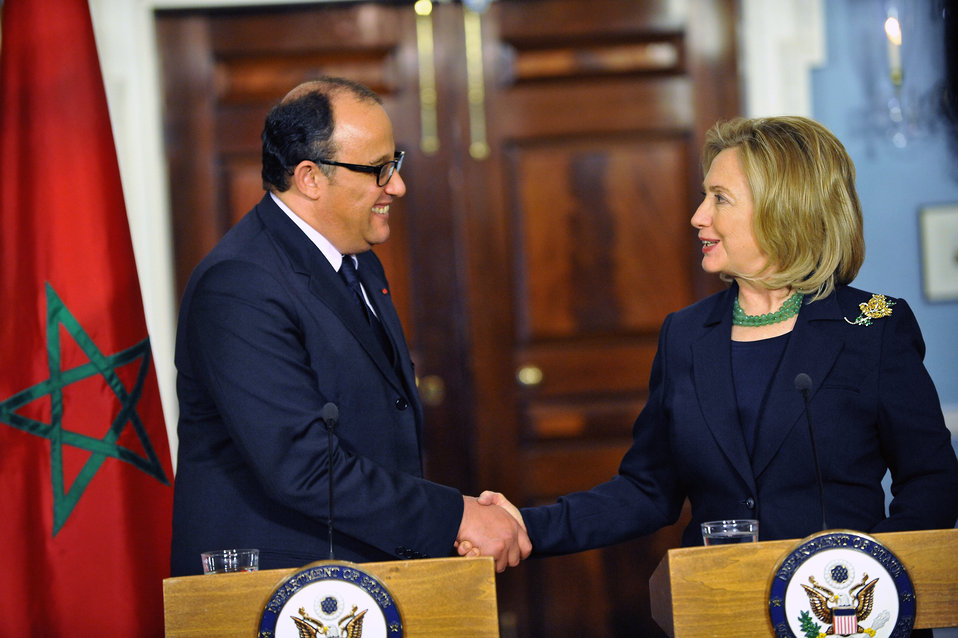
Secretary Clinton Shakes Hands With Moroccan Foreign Affairs and Cooperation Minister Dr. Taieb Fassi Fihri

U.S. Secretary of State Hillary Rodham Clinton shakes hands with Moroccan Foreign Affairs and Cooperation Minister Dr. Taieb Fassi Fihri at the U.S. Department of State in Washington, D.C., on March 23, 2011.